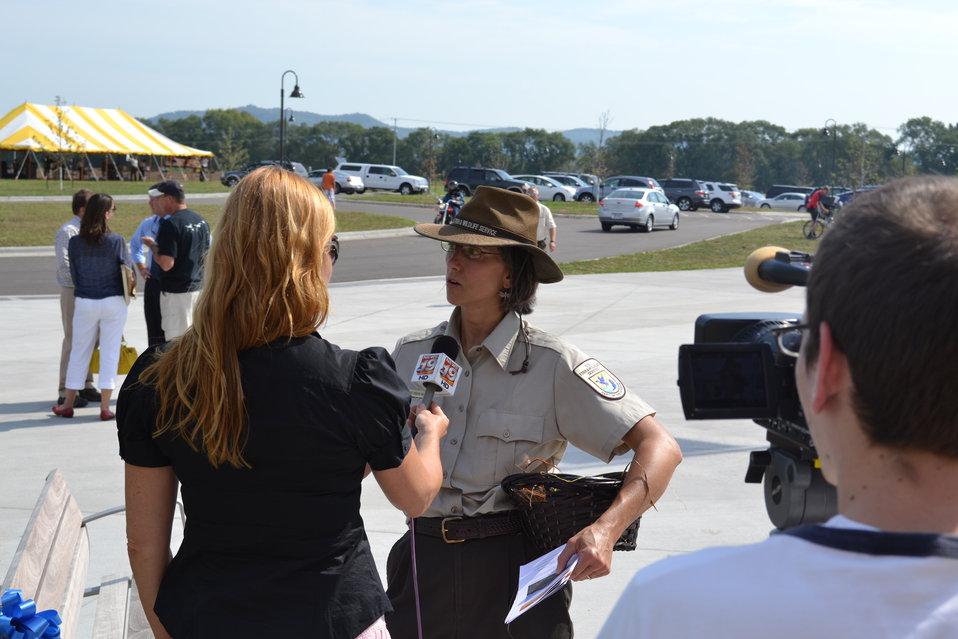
News interview

Paula Ogden-Muse, visitor services manager at the La Crosse District, speaks with local media about the opening of the new visitor center.